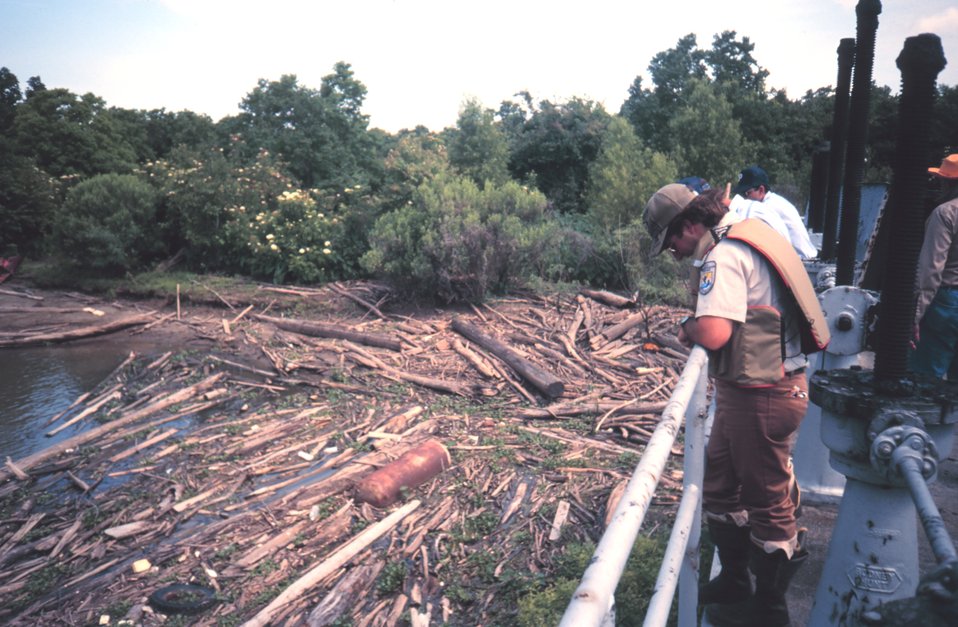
Bayou Lamoque water diversion structure.